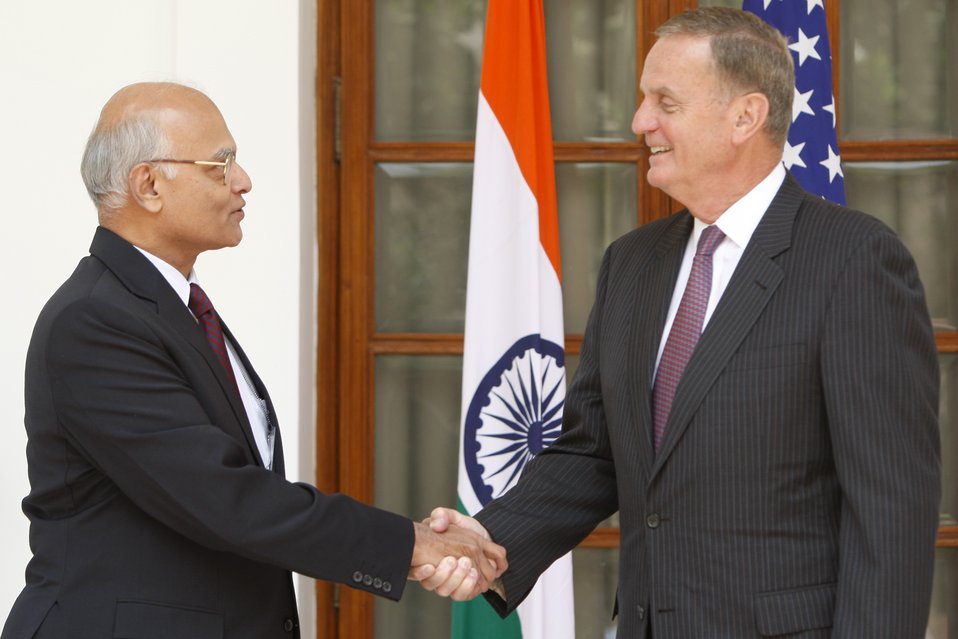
National Security Advisor General James Jones Shakes Hands With Indian National Security Advisor Shivshankar Menon

U.S. National Security Advisor General James Jones and his Indian counterpart Shivshankar Menon shake hands before their meeting in New Delhi on July 14, 2010, in New Delhi, India.